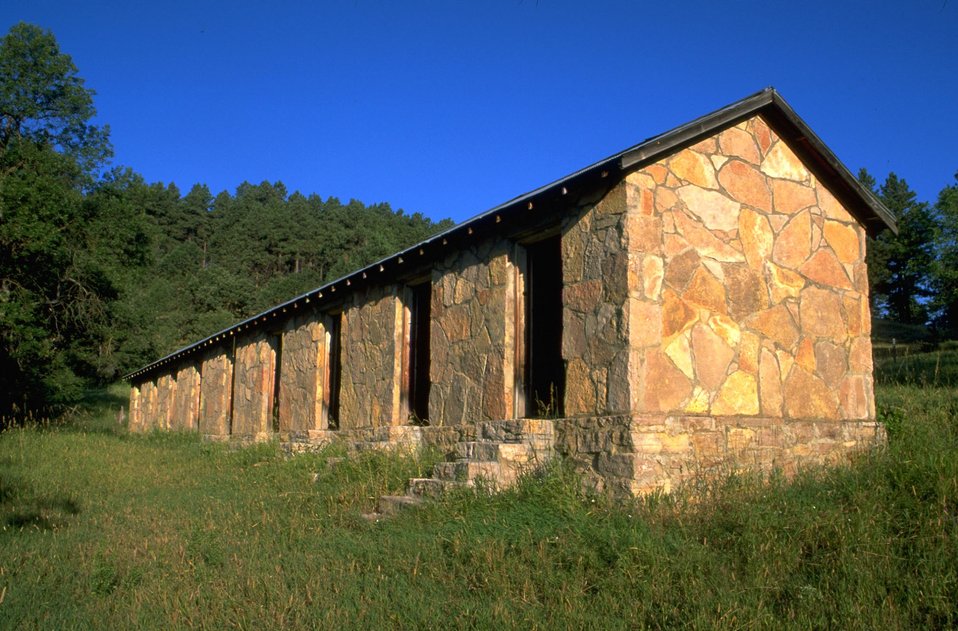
Long stone Building at the south end of Fort Meade